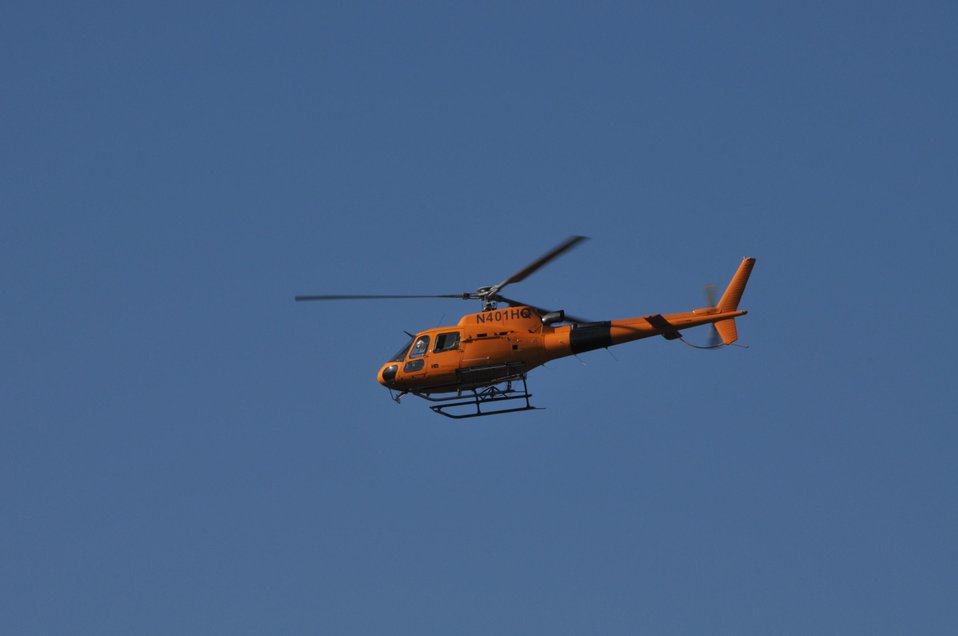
The Incident Commander uses a helicopter to make a morning reconnaissance flight to check on firefighting efforts against the Gold Pan Fire. The Gold Pan Fire in the Bitterroot National Forest near Conner, MT began by lightning on Jul. 16, 2013 by lighting have consumed approximately 16,412 acres.